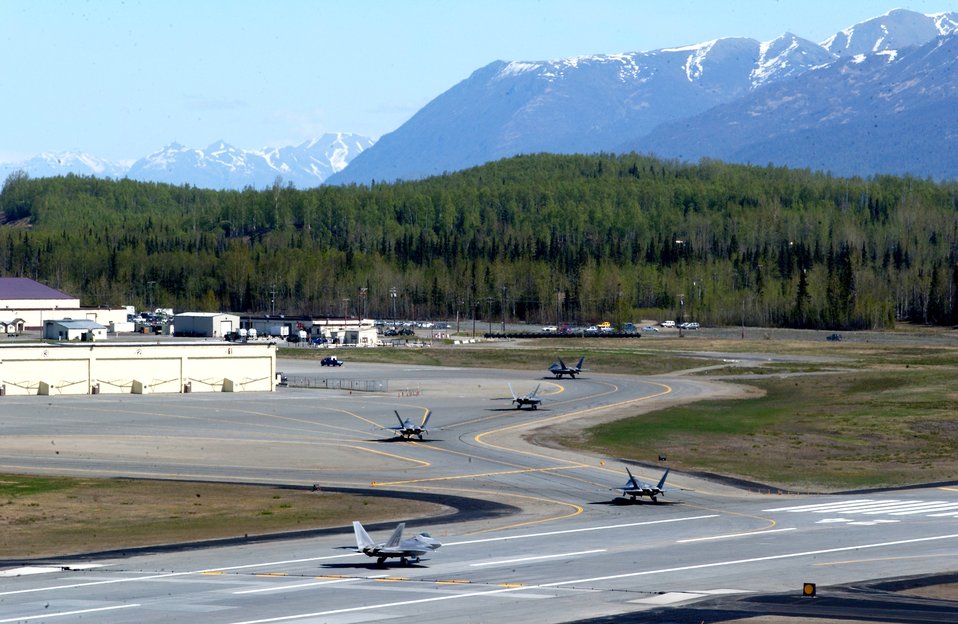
F-22s arrive at Elmendorf for exercise

Five Air Force F-22 Raptors taxi after arrival at Elmendorf Air Force Base, Alaska, on Tuesday May 23, 2006. Raptors from the 27th Fighter Squadron at Langley AFB, Va., are supporting Exercise Northern Edge 2006. The Air Force has selected Elmendorf as the home for the next operational F-22 squadron. The base will receive 36 Raptors, with the first jet expected in fall 2007.